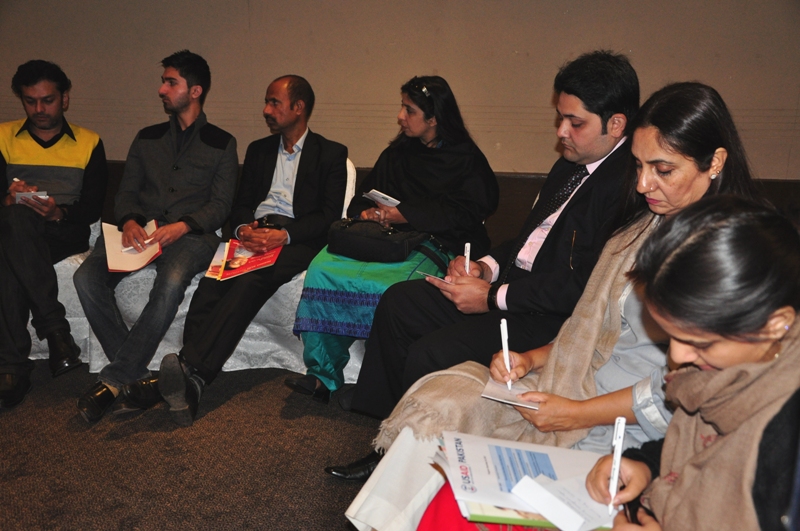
Education Workshop 272